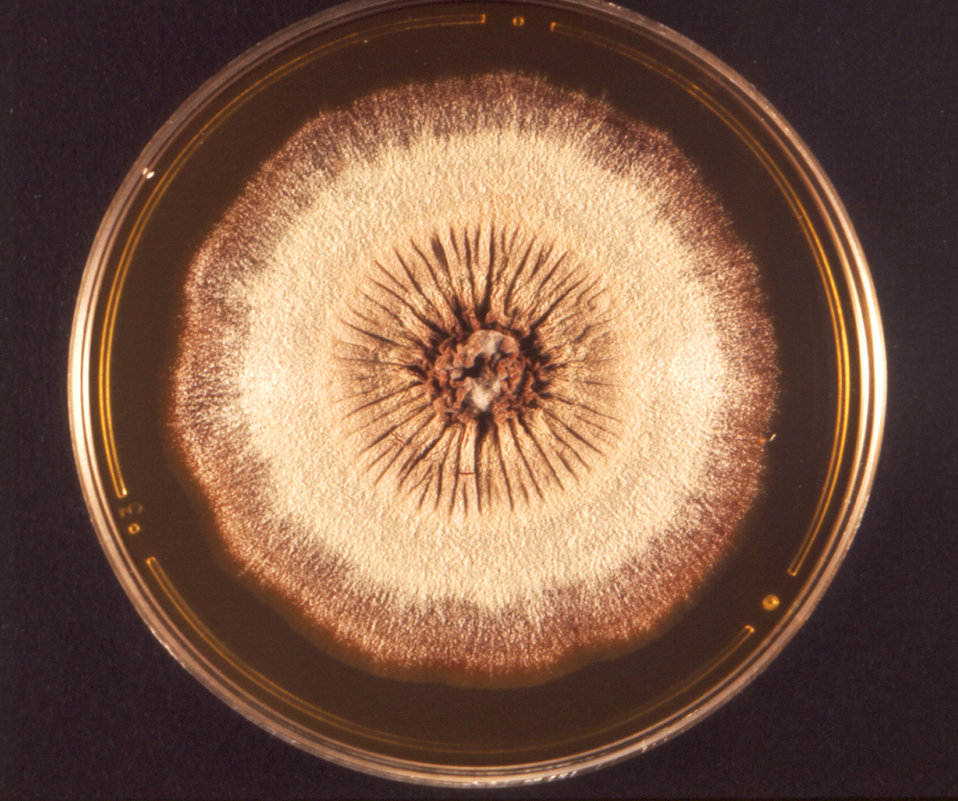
This photograph depicts the frontal view of a Petri dish within which a colony of the African form of the fungus, Trichophyton rubrum, had been cultured. Revealed is the colonial morphology, which in this case is both glaborous, i.e., flat to cottony, and raised and ruffled at its center. Its frontal coloration can range from a white to bright yellowish-beige, as it was here, and even to a red-violet coloration. From the reverse, or from the back, the colonies display a coloration that is a light yellowish to brown, or a reddish brown.